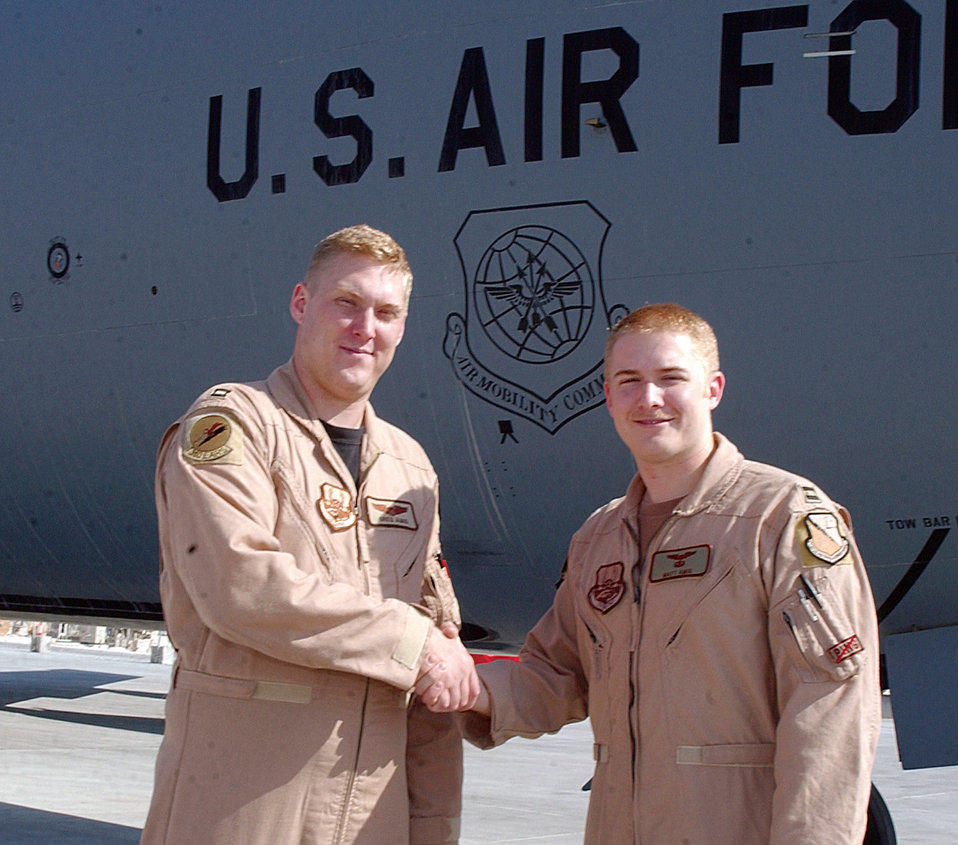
Brothers reunite

SOUTHWEST ASIA (AFPN) -- Capts. Greg Amig (left) and Matthew Amig had a Thanksgiving reunion in the skies of Southwest Asia when Greg refueled his brother during a combat mission.